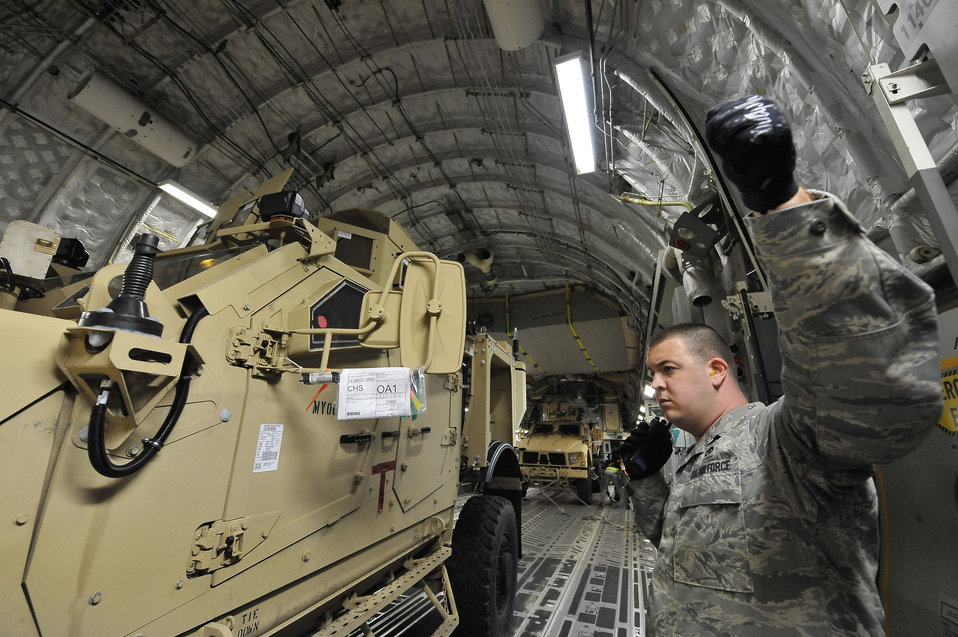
MATV load C-17

Staff Sgt. Nicholas Reddin serves as a clearance spotter while one of two mine-resistant, ambush-protected all-terrain vehicles, or M-ATVs, is loaded onto a C-17 Globemaster III at Charleston Air Force Base, S.C., Sept. 30, 2009. The two M-ATVs are the first to be delivered to the Afghanistan theater for operational use. Sergeant Reddin is an air transport specialist with the 437th Aerial Port Squadron at Charleston AFB. The C-17 is based out of McChord AFB, Wash.